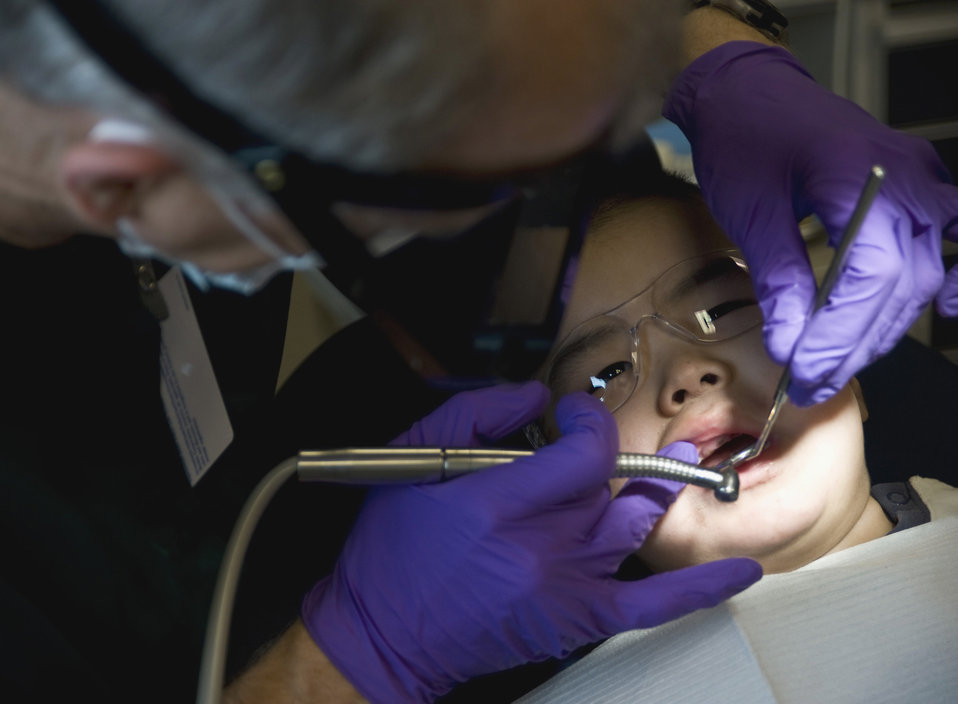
Operation Arctic Care visits Kwethluck village

Navy Capt. Doug Henschel, a dentist from Fort Dix, N.J., inserts a filling for Dylon Sergie, 2, March 10 at a health clinic in Kwethluk, Alaska. A joint military medical team deployed to Kwethluk, a small village in Western Alaska, in support of Operation Arctic Care 2009. This year's Navy-led mission had teams in 11 villages in Alaska's Yukon-Kuskokwim Delta region providing medical, dental and veterinary support at no cost to Alaskan natives.